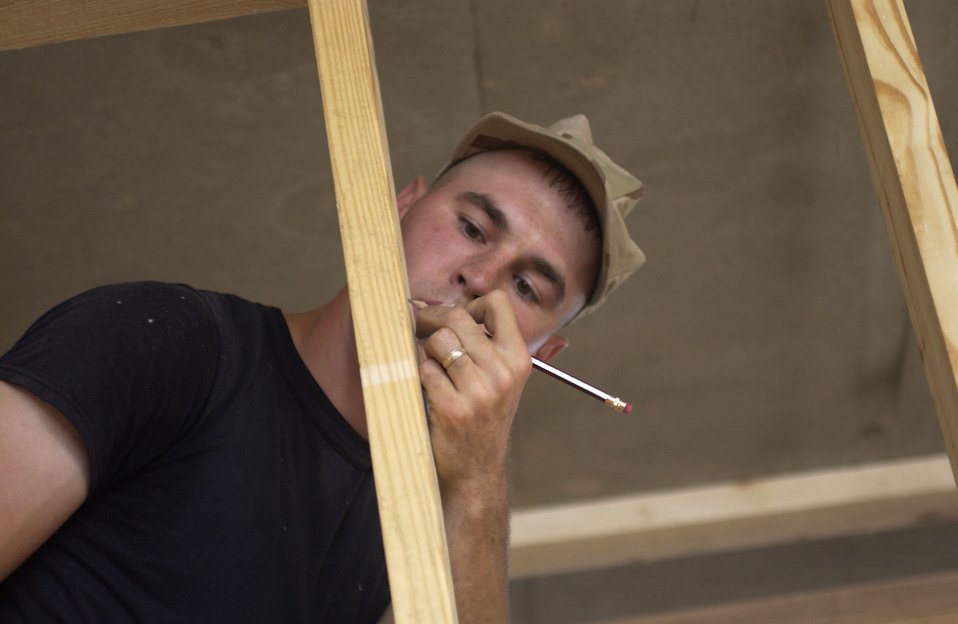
Office renovation

Senior Airman Josh Jankoski writes down measurements during renovation of an office building at Balad Air Base, Iraq, on Thursday, April 20, 2006. Airman Jankoski is with the 557th Expeditionary Red Horse Squadron.